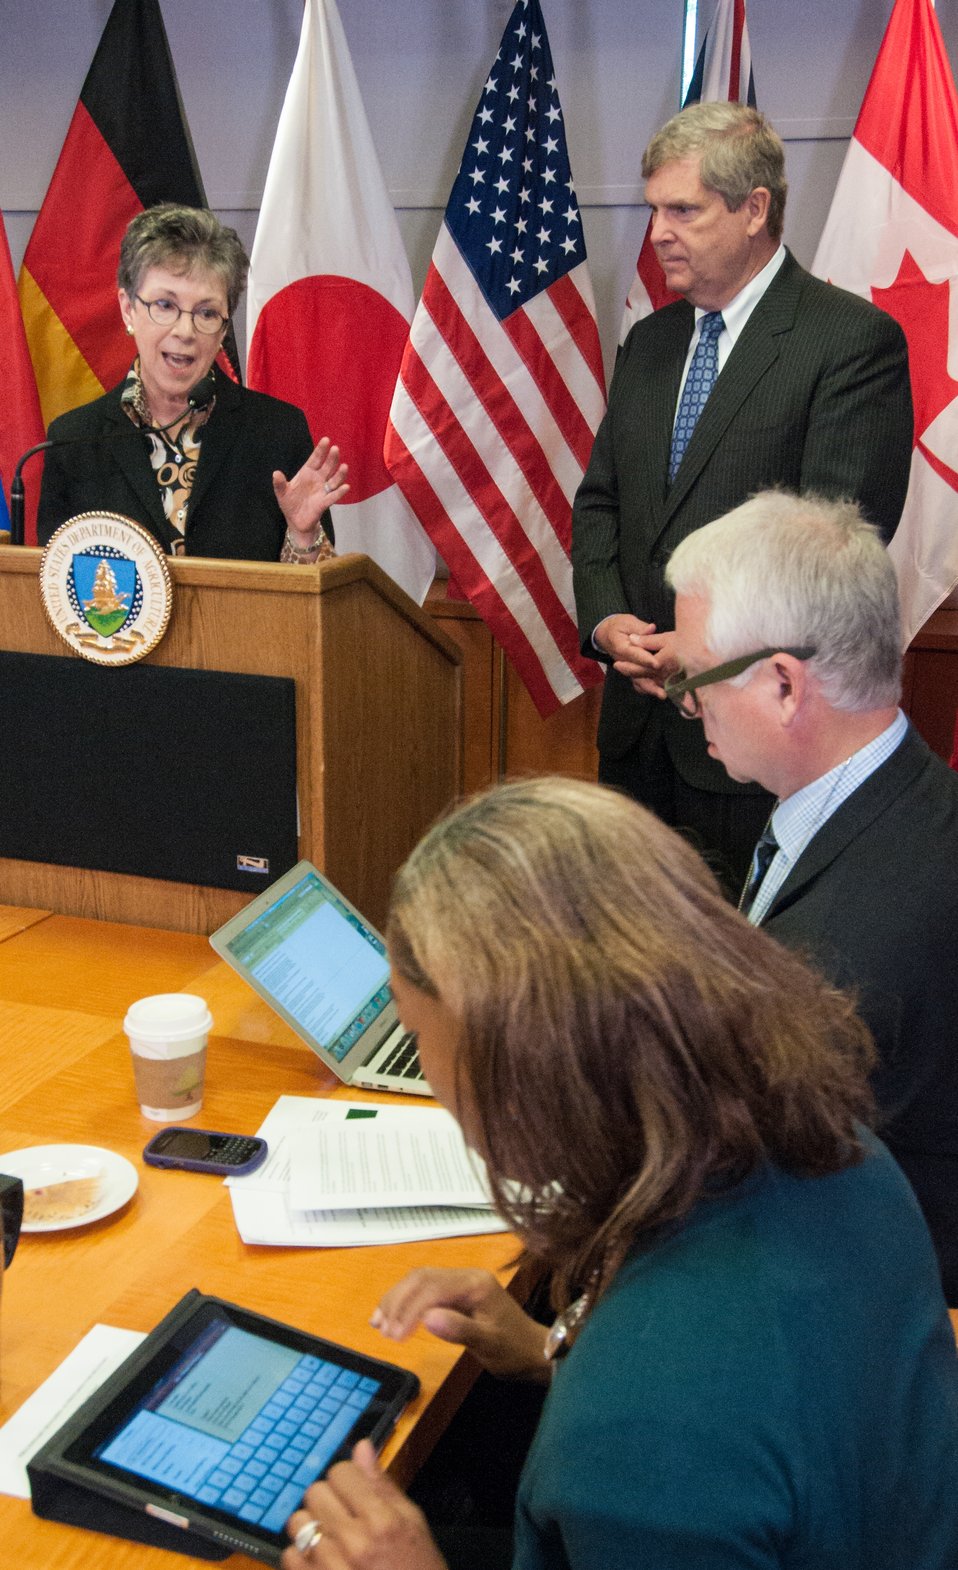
Agriculture Secretary Tom Vilsack and Agriculture Under Secretary for Research, Education, and Economics (REE) Dr. Catherine Woteki held a press conference after giving remarks at the G-8 International Conference on Open Data for Agriculture in Washington, D.C. on Monday, Apr. 29, 2013. The conference launched a new 'virtual community' of Food, Agriculture, and Rural data on Data.gov-the U.S. Government's data sharing website-to catalogue America's publicly available agricultural data and increase the ability of the public to find, download, and use datasets that are generated and held by the Federal Government. The data community features a collection of more than 300 newly cataloged datasets, databases, and raw data sources related to food, agriculture, and rural issues from agencies across the U.S. Government. In addition to the data catalog, the virtual community shares a number of applications, maps and tools designed to help farmers, scientists and policymakers improve global food security and nutrition.